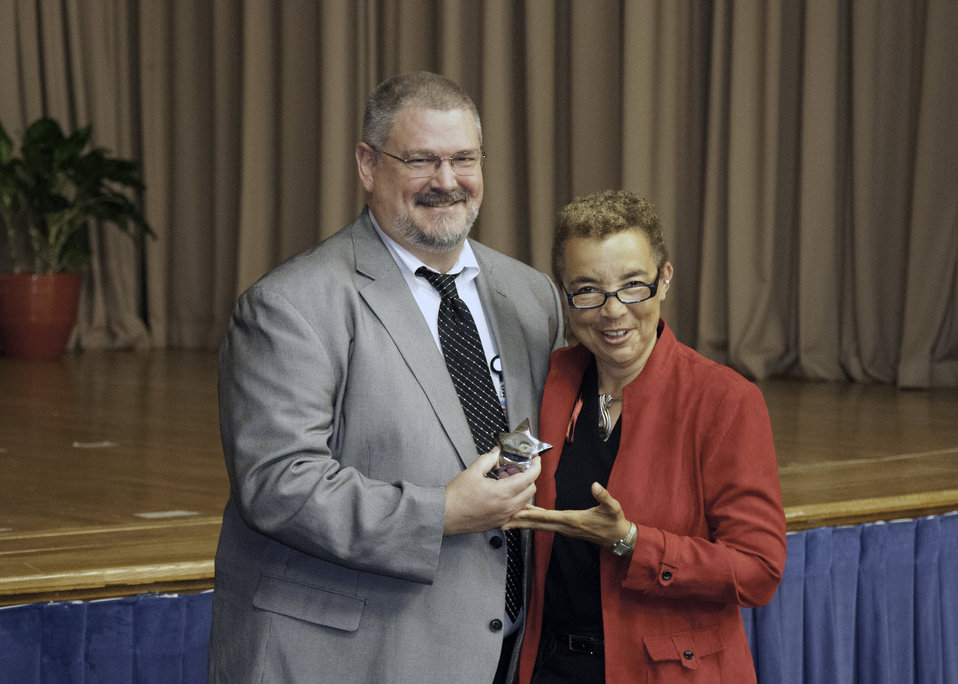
President of the U.S. Department of Agriculture (USDA) Federal Gay, Lesbian, and Bisexual Employees (FEDGLOBE) Blake Velde presents leadership award to Resource Conservationist and the national Lesbian Gay Bisexual Transgender Special Emphasis Program Manager Sharon Nance for the Natural Resources Conservation Service (NRCS). Nance was honored at USDA’s annual Lesbian Gay Bisexual Transgender (LGBT) Pride Observance in the Jefferson Auditorium in Washington, D. C. on June 7, 2012.